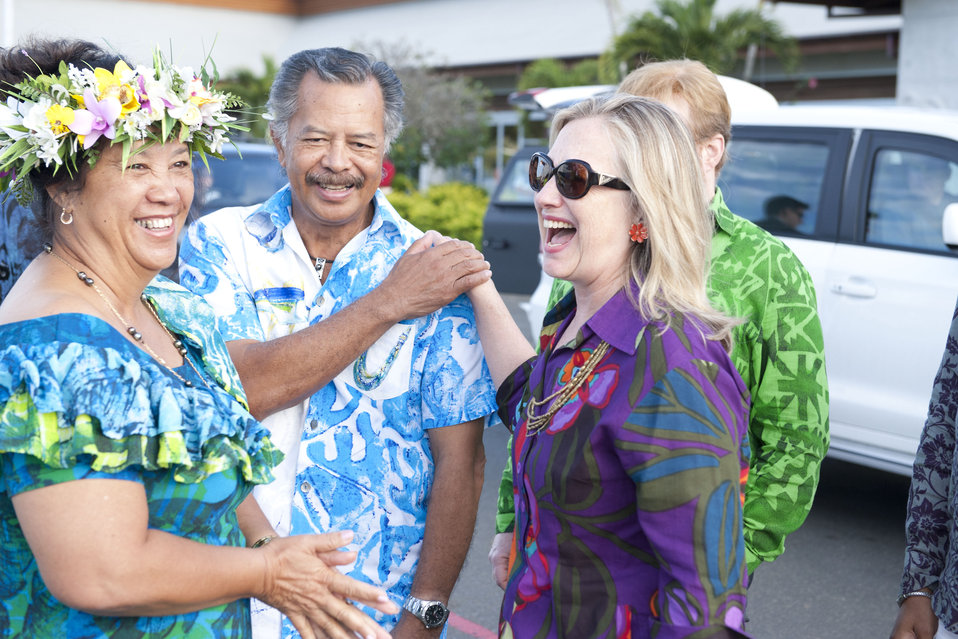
Secretary Clinton With Prime Minister Puna and Mrs. Puna

U.S. Secretary of State Hillary Rodham Clinton shares a laugh with Prime Minister Henry Puna and Mrs. Akaiti Puna of the Cook Islands at the airport in Rarotonga, Cook Islands, September 2, 2012.